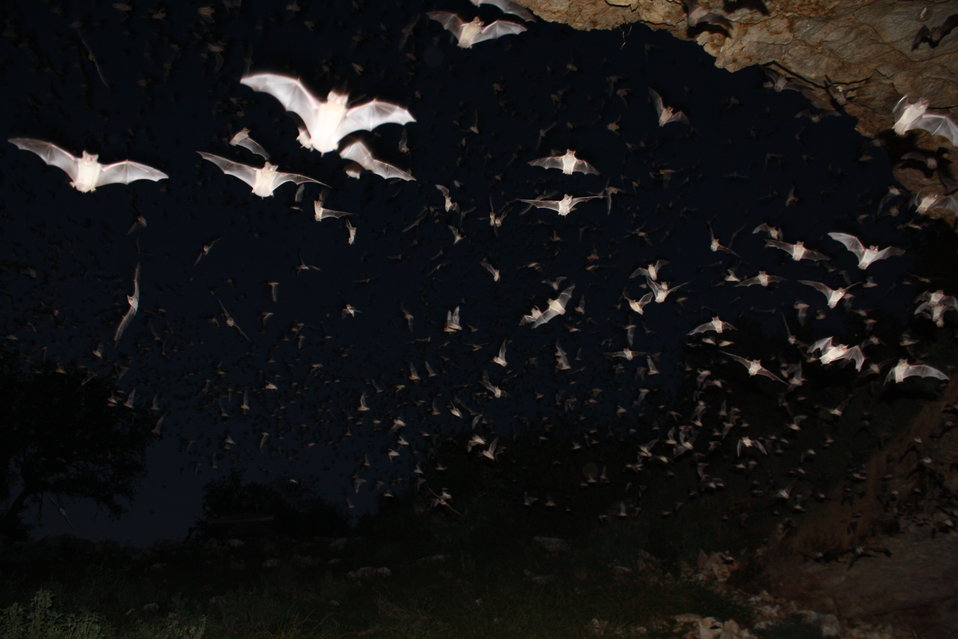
Mexican free-tailed bats exiting Bracken Bat Cave